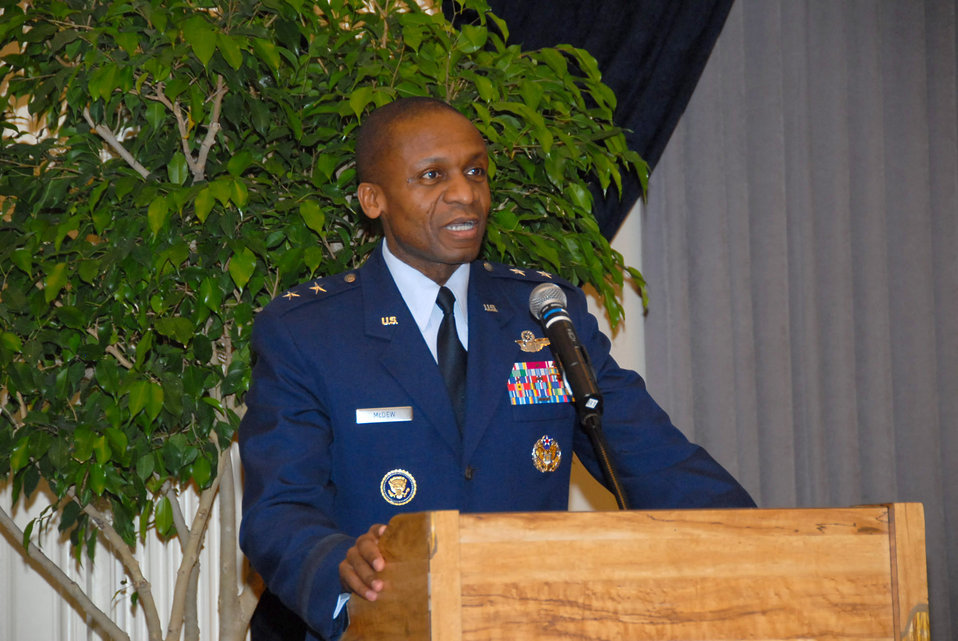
General speaks on Presidential oath, civil rights struggles

Maj. Gen. Darren W. McDew, director of public affairs for the Secretary of the Air Force, speaks to the audience at Maxwell Air Force Base, Ala., Feb. 4. As part of the African-American History Month celebration, General McDew related the historic struggles of African-Americans that were